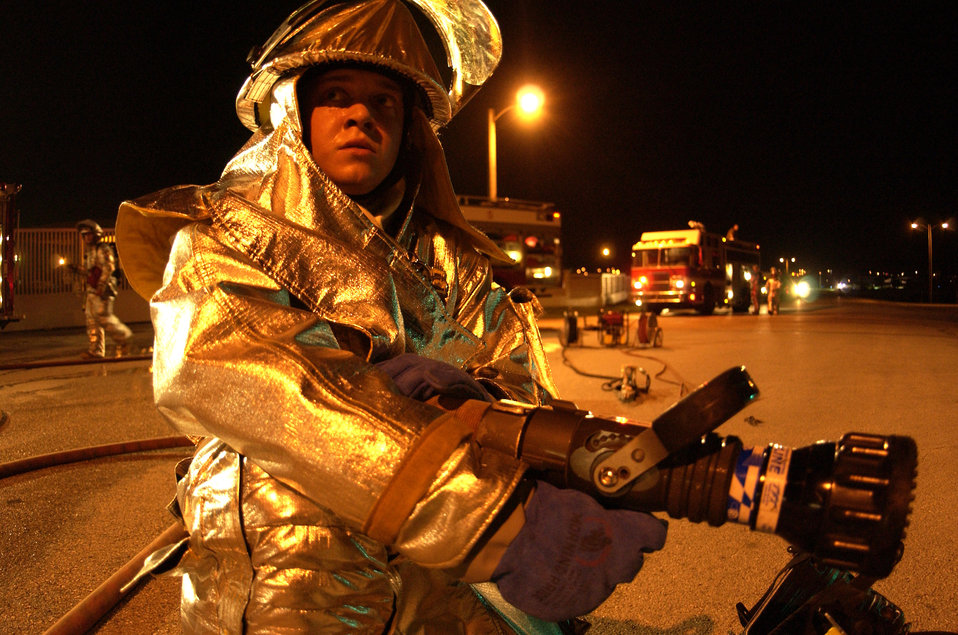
Practice makes perfect

Airman 1st Class Kyle Houseman responds to a simulated vehicle accident at Andersen Air Force Base, Guam, during the Beverly Palm 06-07 exercise on July 10. Airman Houseman is with the 36th Civil Engineer Squadron.